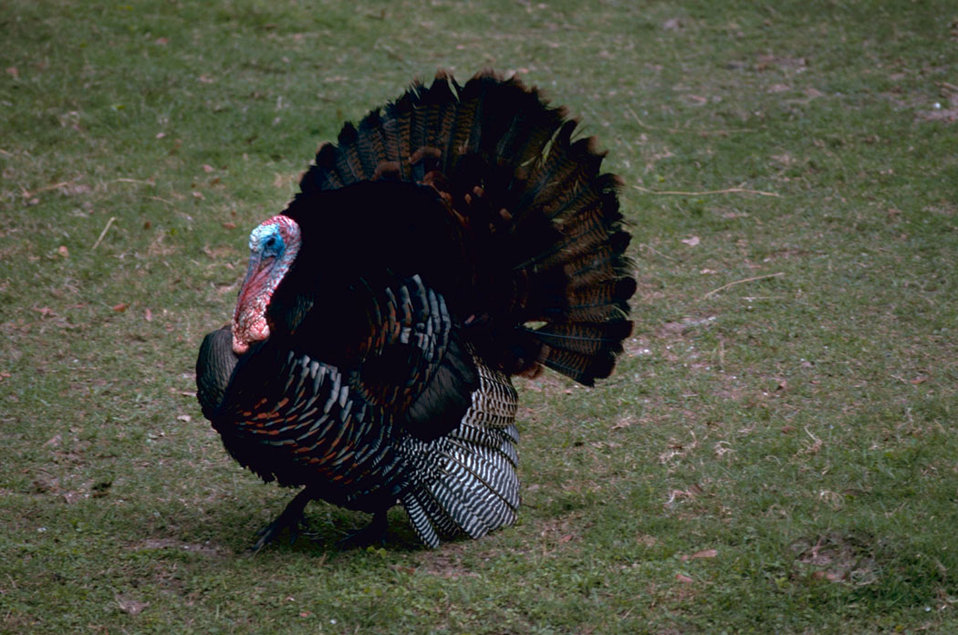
Eastern Wild Turkey.